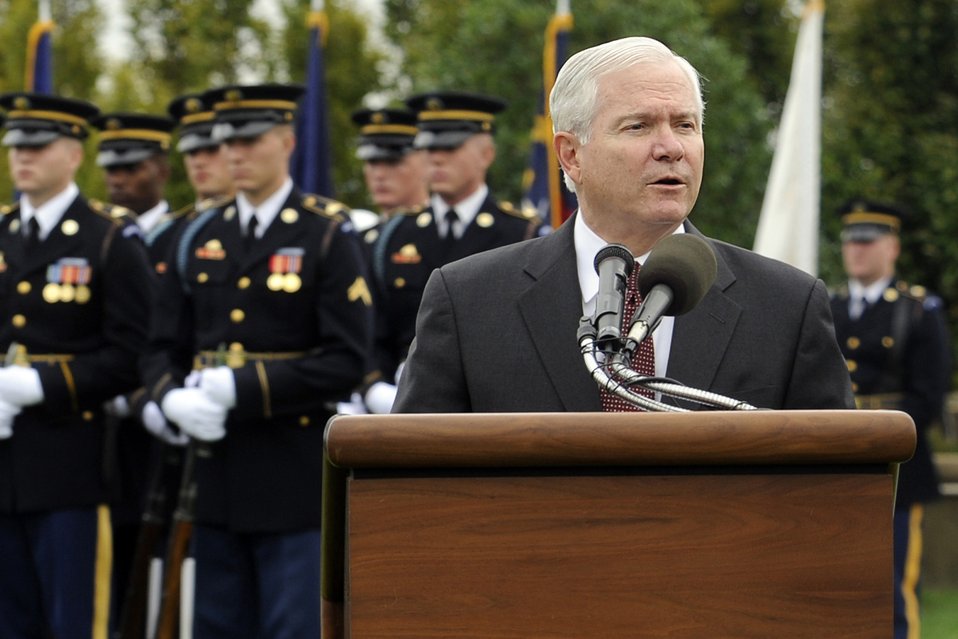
Pentagon ceremony salutes former POWs, missing in action

Defense Secretary Robert M. Gates addresses the audience during the National POW/MIA Recognition Day Ceremony at the Pentagon, Sept. 18, 2009.